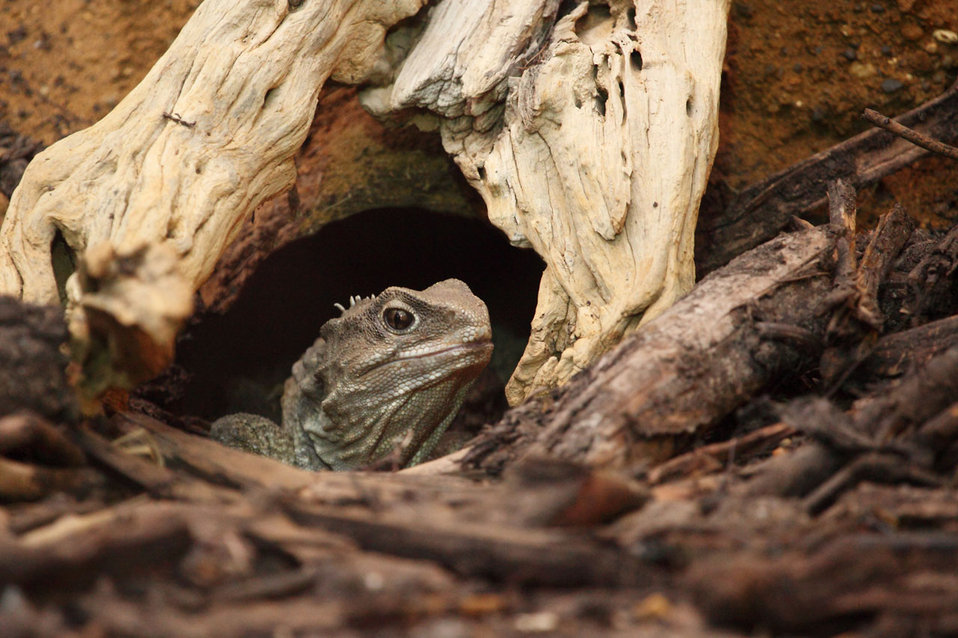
Iguana

Large lizard in hole.